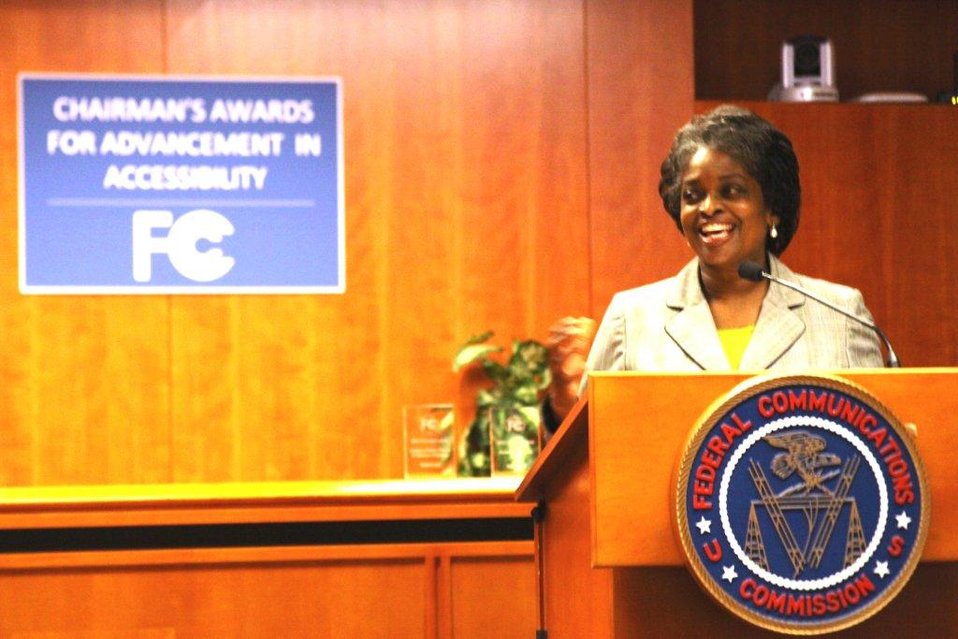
Commissioner Clyburn Giving Remarks at the Advancement in Accessibility Awards